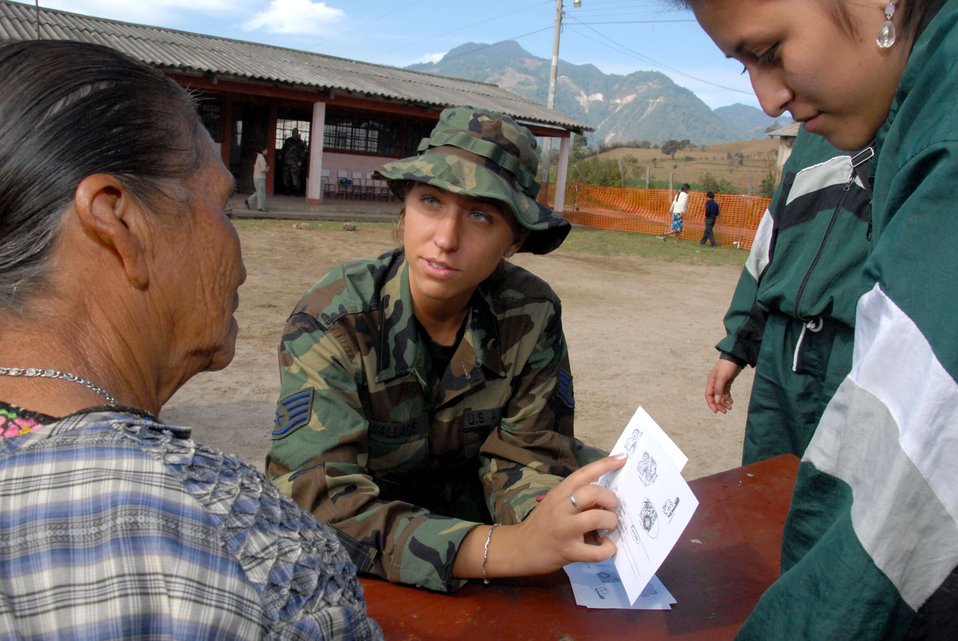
Reservists take medical care to Guatemalans

Staff Sgt. Lisa Wallace with the help of a student interpreter triages a patient set to receive medical care during the New Horizons Medical Readiness Training Exercise conducted April 14 through 28 in the region of San Marcos, Guatemala. The medical team treated more than 8,000 patients during their stay in Guatemala. Sergeant Wallace is a medical technician with the 445th Aerospace Medicine Squadron, Wright Patterson Air Force Base, Ohio.